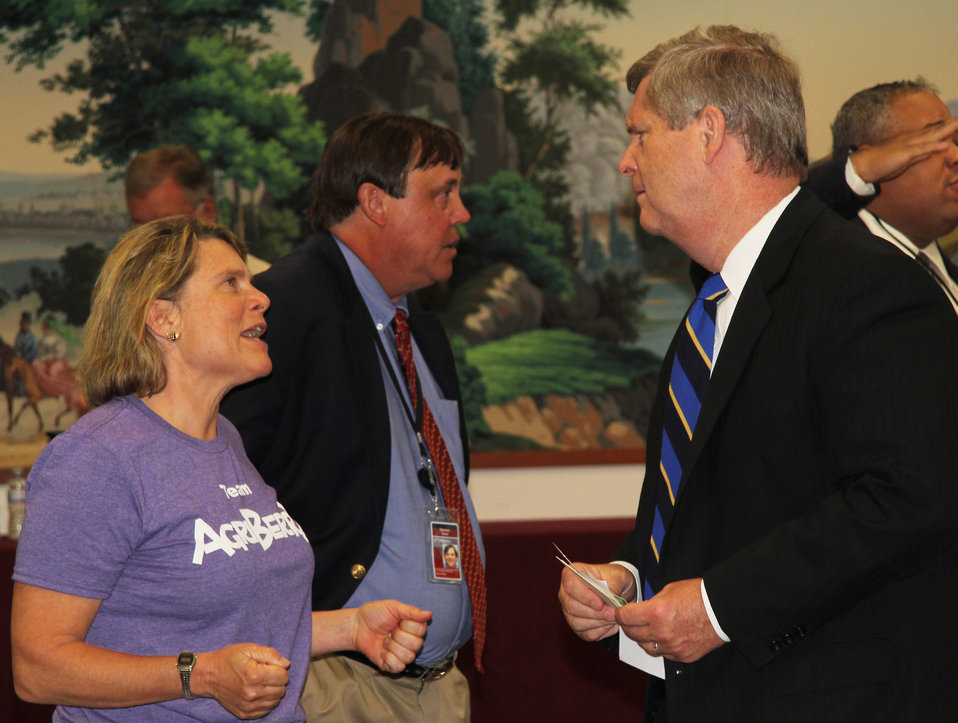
Virginia producer Anne Geyer shares her experiences with Agriculture Secretary Tom Vilsack at a roundtable meeting with America's Farmers and Ranchers in Richmond, VA., on Wednesday, May 23, 2012.